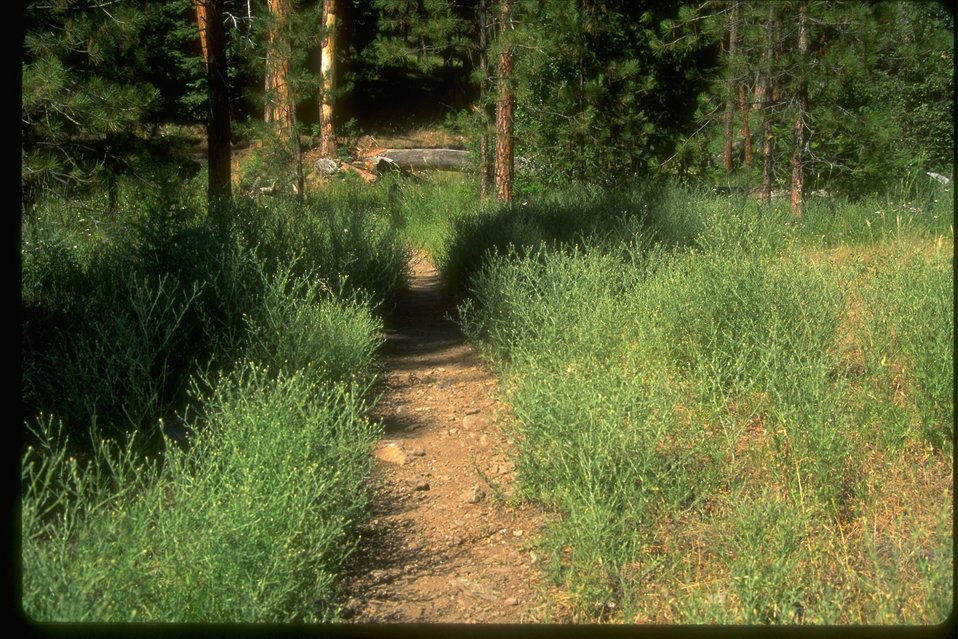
Diffuse Knapweed in Mill Creek Wilderness (Forest Service land.)